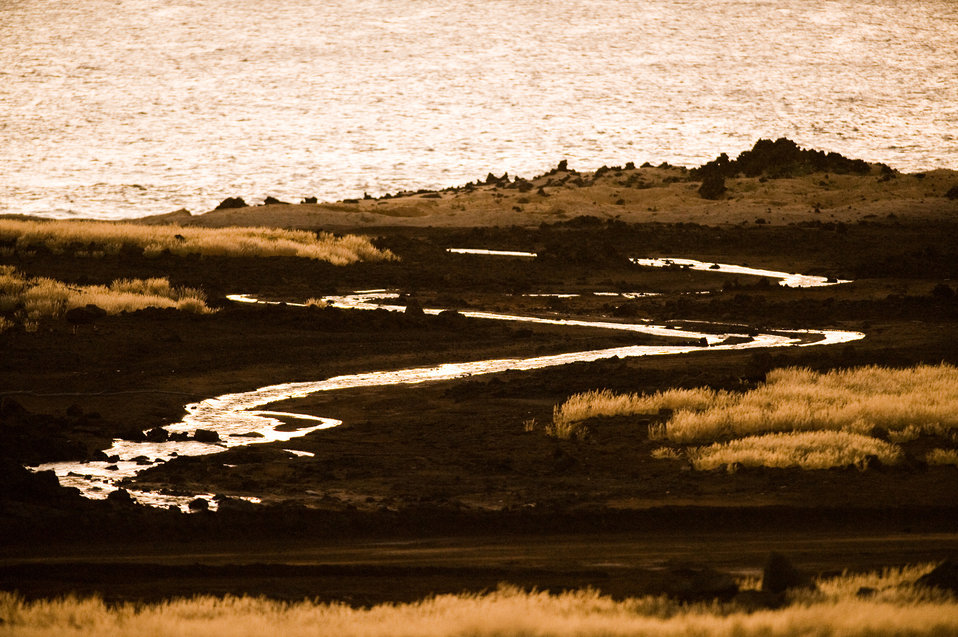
Ascension Island Green Way

Brine that was separated from the sea water by a flash steam desalination process flows over volcanic rock to the ocean surrounding Ascension Island, home of the 45th Operations Group Detachment 2, Ascension Auxiliary Airfield (AAF), South Atlantic Ocean, on June 28. 2009. This is part of the self-sufficient, power, water and waste infrastructure of the base.